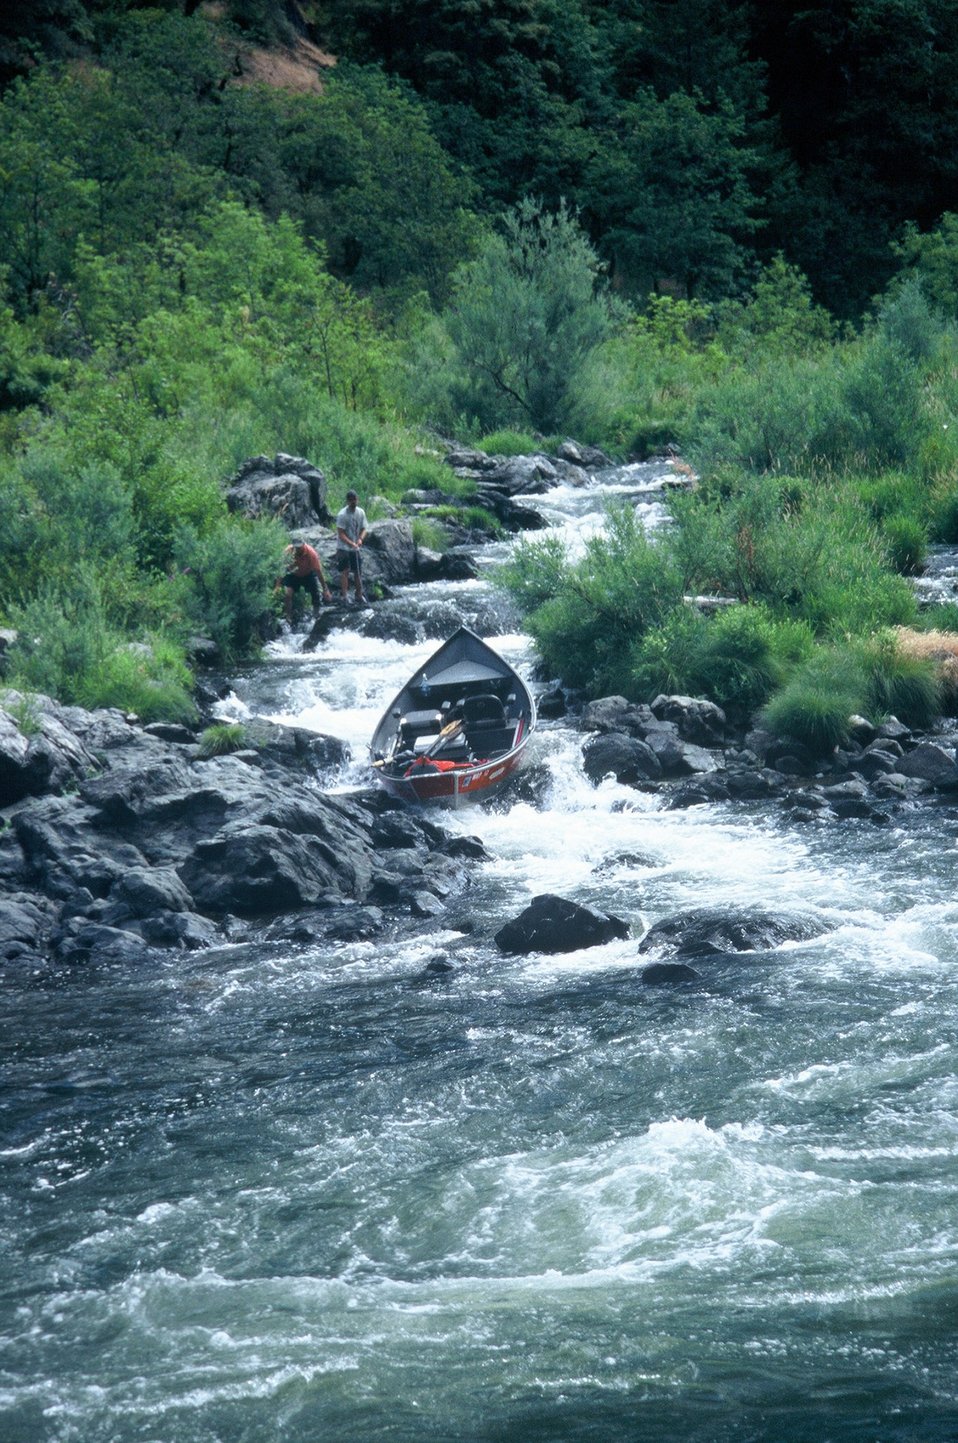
Rainie Falls Fish Ladder